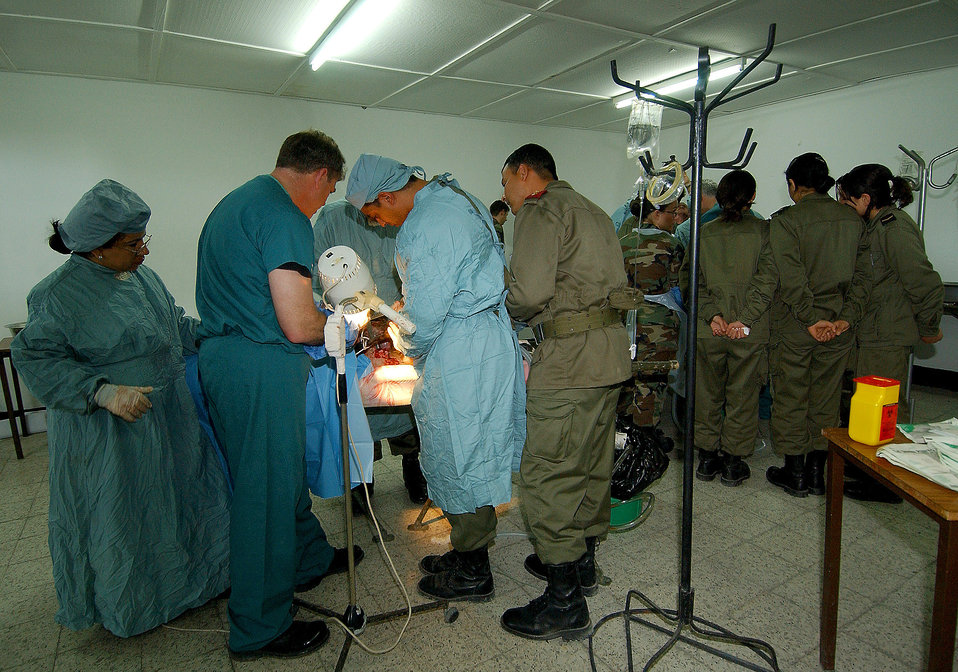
MEDLite 2006

Air Force medical specialists and Tunisian military physicians perform trauma surgery on a goat as part of a refresher course for surgeons during Exercise MEDLite 2006 at Kharrouba Air Base, Tunisia, on Saturday, April 1, 2006. MEDLite 2006 provides the opportunity for Air Force medical specialists to exchange medical skills, techniques and procedures with Tunisian military medical personnel.